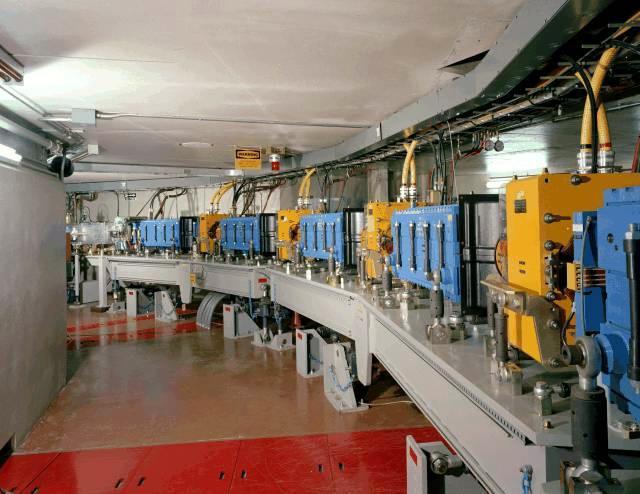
PART OF THE ADVANCED LIGHT SOURCE BOOSTER SYNCHROTRON AT LAWRENCE BERKELEY NATIONAL LABORATORY.

THE CIRCULAR BOOSTER SYNCHROTRON GIVES A BOOST FROM AN ACCELERATING CHAMBER TO THE ELECTRONS EACH TIME THEY GO AROUND. IN LESS THAN ONE SECOND, THE ELECTRONS MAKE 1,300,000 REVOLUTIONS, TRAVELING AT 99.999994% OF THE SPEED OF LIGHT WITH AN ENERGY OF 1.5 BILLION ELECTRON VOLTS AND ARE READY TO BE TRANSPORTED TO THE STORAGE RING.